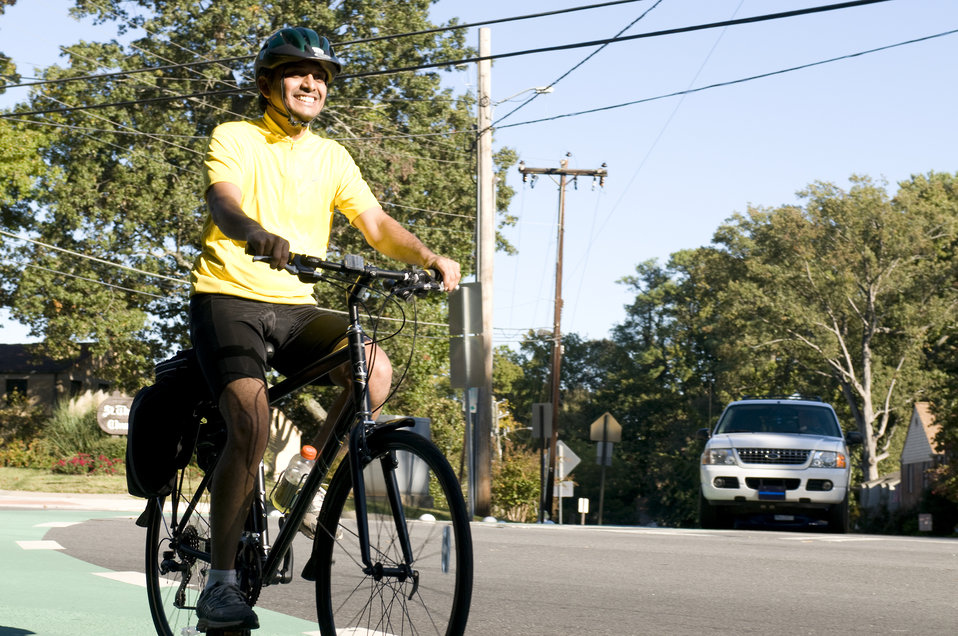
Photographed on a sunny Georgia day this male bicyclist had embarked on a morning bicycle ride. Note the brightly-colored shirt he was wearing, which would help drivers see him more easily, as well as the protective, aerodynamic helmet, and the snug leggings, all adding to an overall safer bike ride. Also important, is that he was riding in the designated bicycle traffic lane, and abiding by the proper rules of the road, which govern drivers of both bicycles, and motorized vehicles.